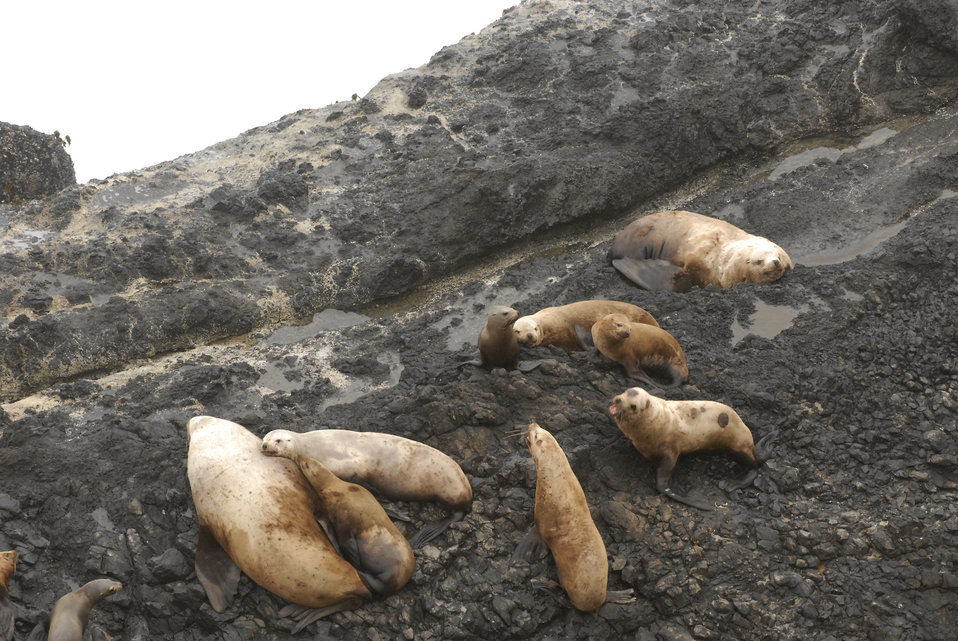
Steller sea lions rest along the Oregon coast on June 12, 2008. The Steller sea lion is a threatened species of sea lion in the northern Pacific. It is the largest of the eared seals and is inferior in size only to the walrus and the two elephant seals. Adult animals are lighter in color than most sea lions, ranging from pale yellow to tawny and occasionally reddish. Steller sea lions are skilled and opportunistic marine predators feeding on a wide range of fish.